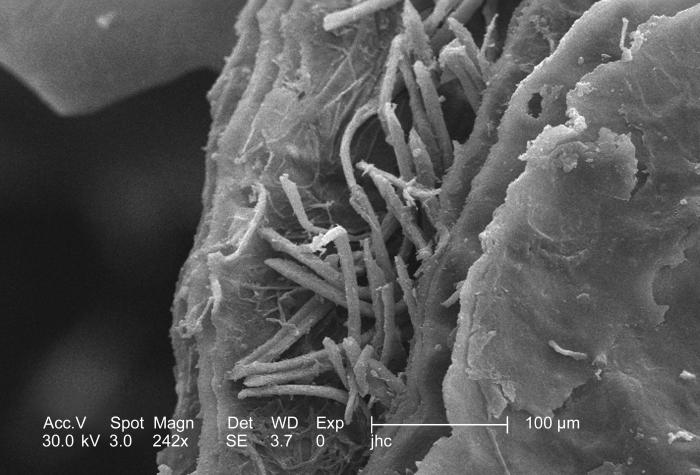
At a moderately high magnification of 242x this scanning electron micrograph (SEM) depicted some of the ultrastructural details made visible of the surface of an unidentified wasps' nest found on the ground in the Decatur, Georgia suburbs. Note that the nest material takes on the appearance of woven fibers embedded in a glue-like matrix, very similar to the way in which rebar, i.e., iron textured rods, is embedding in concrete to reinforce the building material. Also of note, is the lamellated appearance of the nest construct, imparting an almost 'sandwich-like' configuration of the nesting materials.